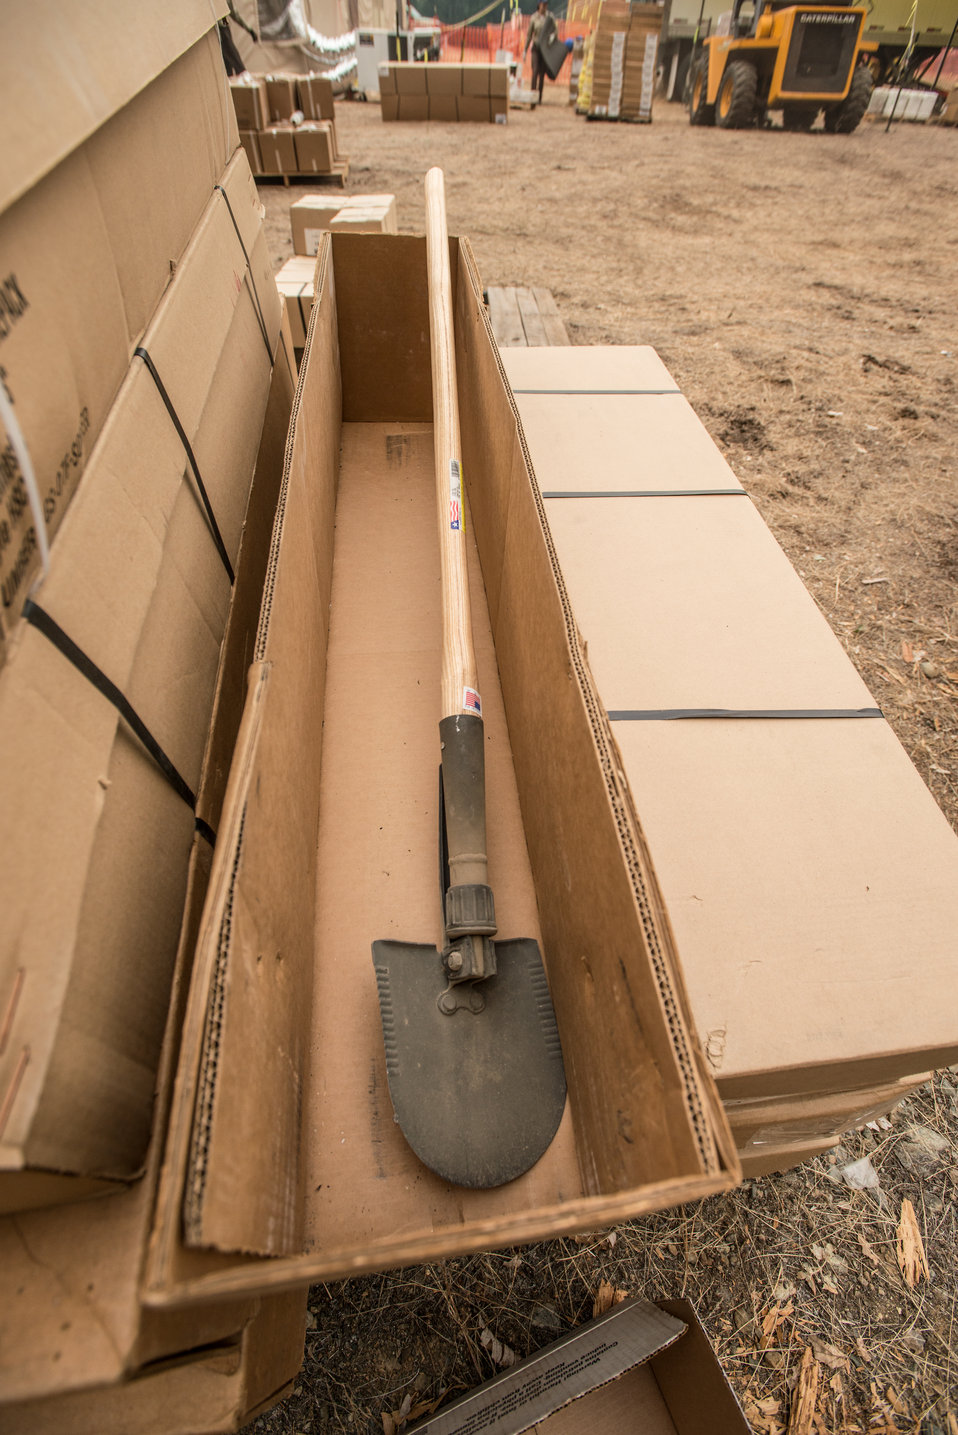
New Combi Tools available for firefighters at the Salmon River Complex Fire burning northwest of Sawyers Bar and west of Etna and Yreka, CA in the Klamath National Forest, on Tuesday, Aug. 6, 2013.It is vital that when a firefighter needs fire resistant clothing, a Mccloud Tool, Pulaski Axe, Combi Tool, pumps, connectors and hoses to draw water from a portable reservoirs to pressurize hand line (fire hoses), they go to this centralized point to get readily available item for issue or replacement as needed. These supplies have been shipped from the National Interagency Supply Cache System depots and/or other caches to this and other fires across the nation.